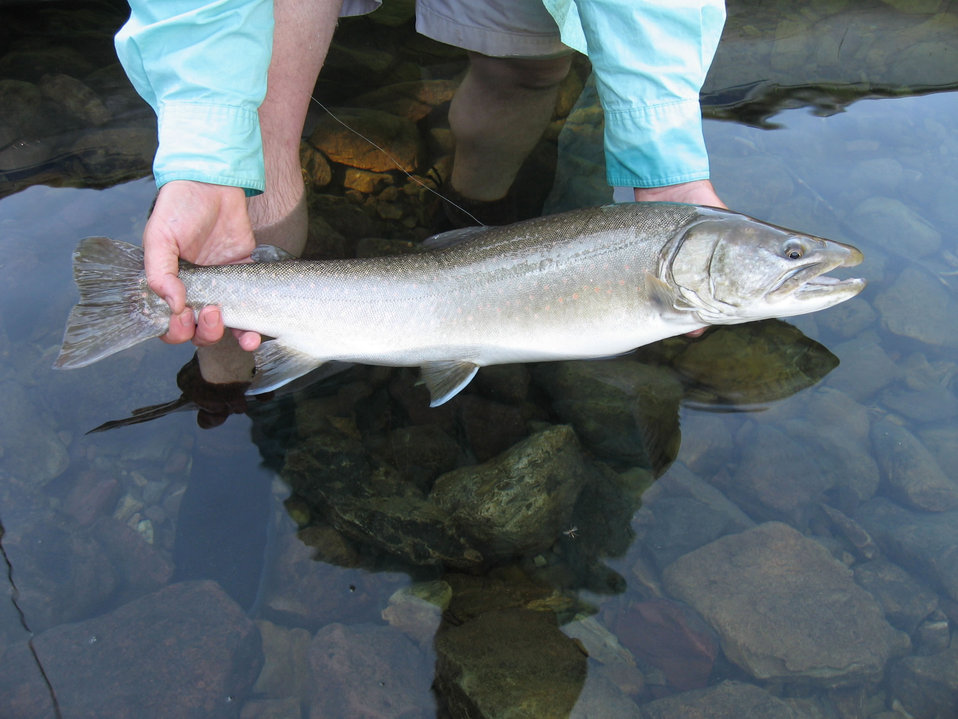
Bull Trout